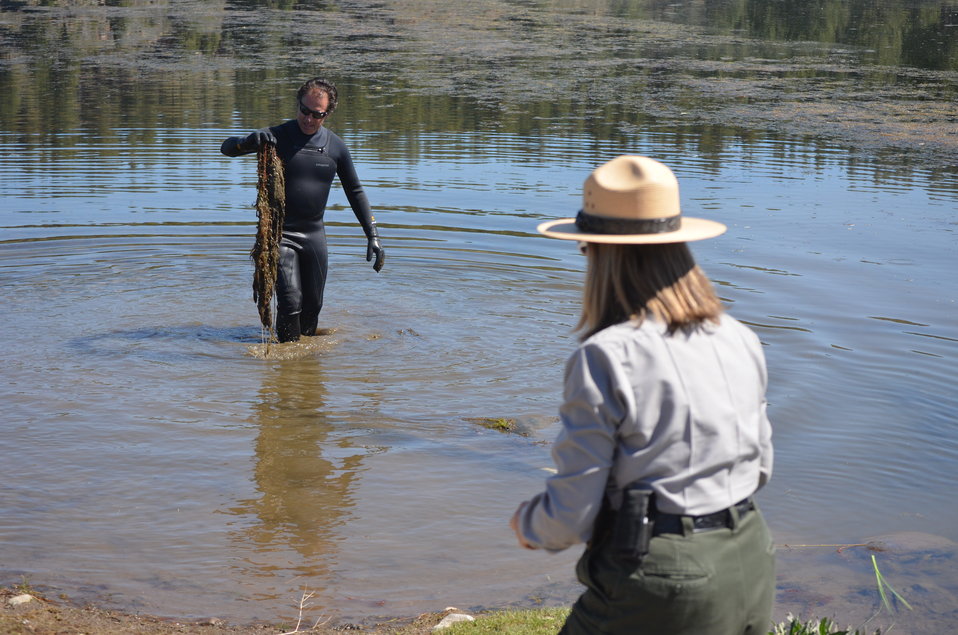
Corps fights invasive weeds at Martis Creek Lake

Tahoe Divers Conservancy director, Phil Caterino, pulls invasive milfoil from Martis Creek Lake in Truckee, Calif., during a weed barrier removal, cleaning and replacement project May 19, 2012. The U.S. Army Corps of Engineers and Tahoe Divers Conservancy have teamed up to sustainably eradicate invasive milfoil at the lake, managed by the Corps’ Sacramento District.